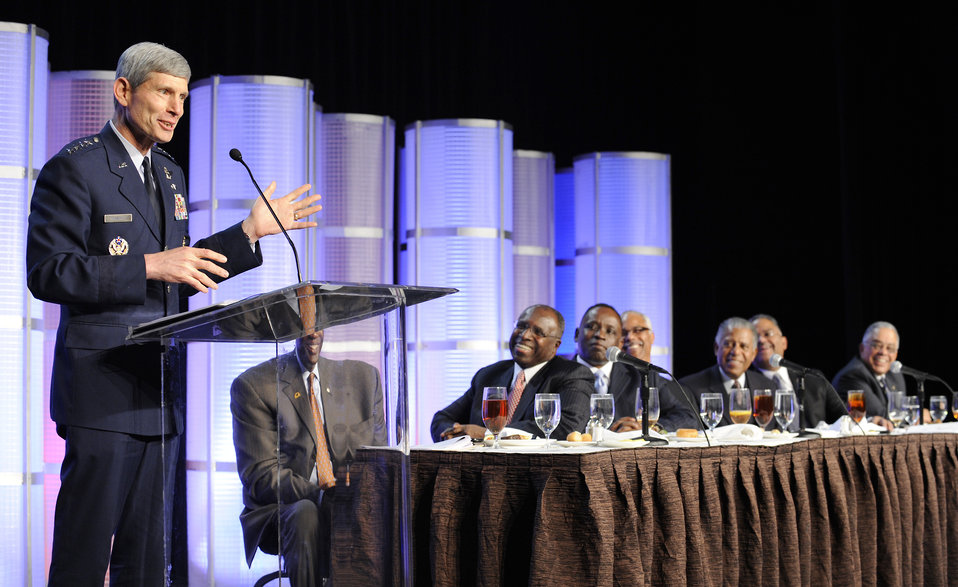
Black Engineer of the Year Awards

Members of the Stars and Stripes Committee look on as Air Force Chief of Staff Gen. Norton Schwartz gives the keynote address on Feb. 19, 2010, at the 5th Stars and Stripes tribute dinner, which is part of the 24th Annual Black Engineer of the Year Awards Conference being held Feb. 18 to 20 in Baltimore. This year's tribute dinner's theme is Saluting the Role of Our Military. The conference seeks to recognize a growing cadre of diverse professionals who are contributing to America's competitiveness and serving as role models to historically underrepresented groups in the sciences. General Schwartz emphasized that in order to maintain the world's best Air and Space force it is imperative to attract, recruit, train and retain the skilled scientists and engineers needed to create tomorrow's aerospace leaders.